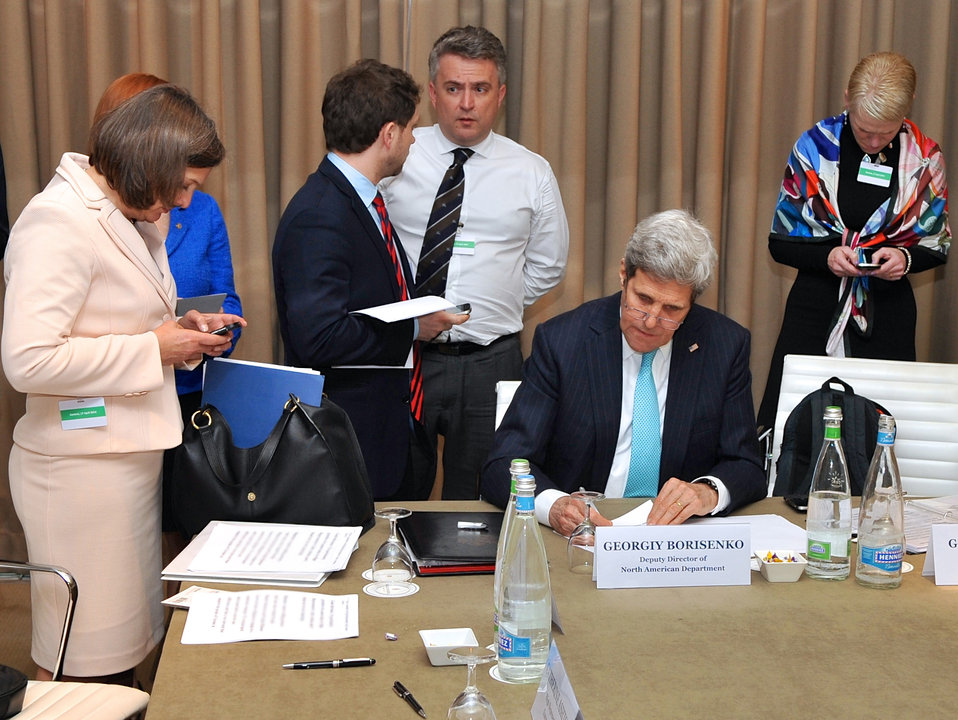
Secretary Kerry Puts Final Touches on Remarks Before News Conference in Geneva

U.S. Secretary of State John Kerry, sitting among seats formerly occupied by Russian interlocutors, puts the final touches on remarks he delivered at a news conference following a meeting in Geneva, Switzerland, on April 17, 2014, with Russian, Ukrainian, and European Union officials about Ukraine.